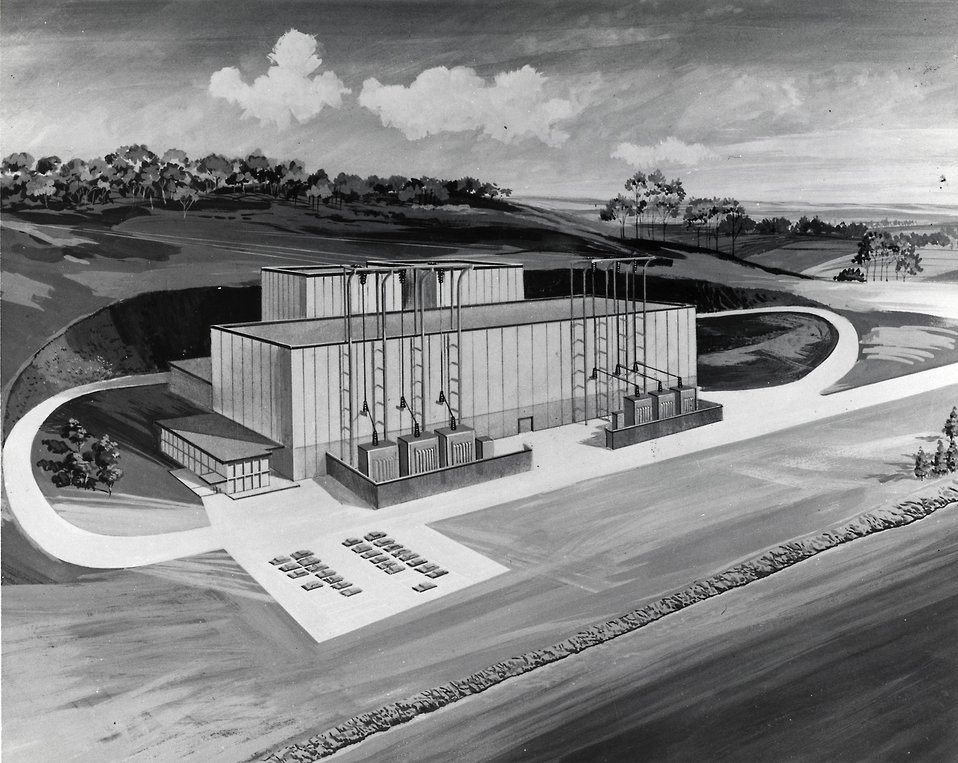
Artist's conception of the new Peach Bottom Atomic Power Station building which will house two units of 1065 megawatts each. Circa 1967.